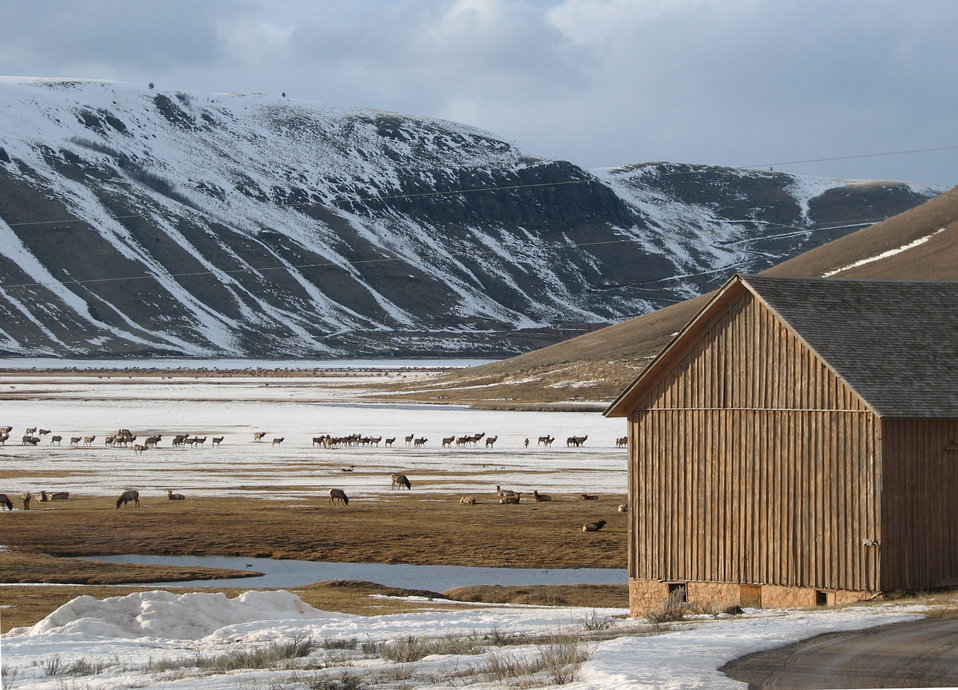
View from the Refuge Road

With the historic Miller Barn in the foreground, a group of elk can be seen from the Refuge Road that parallels the National Elk Refuge's eastern boundary.